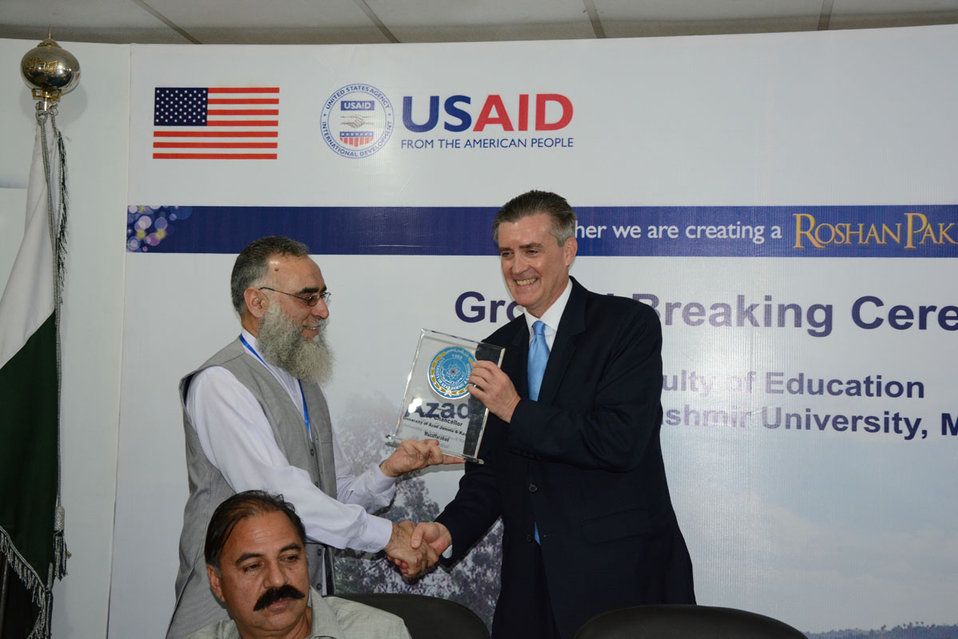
The United States Ambassador to Pakistan, Richard Olson broke ground for a U.S. funded construction of a new Faculty of Education building in Muzaffarabad, AJK. 29